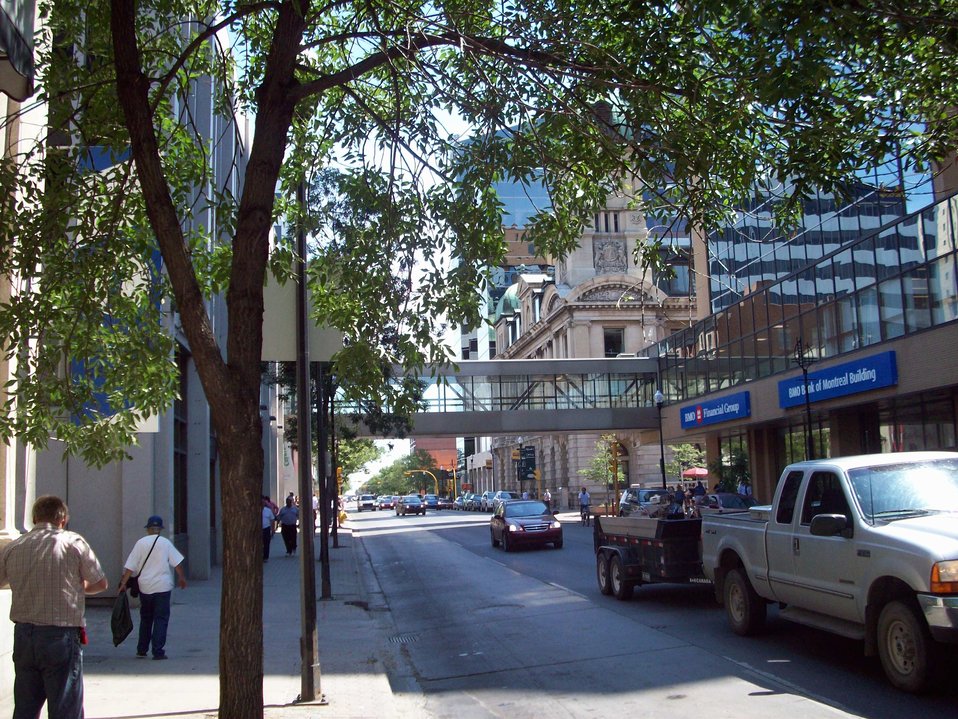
11th Avenue, 2008